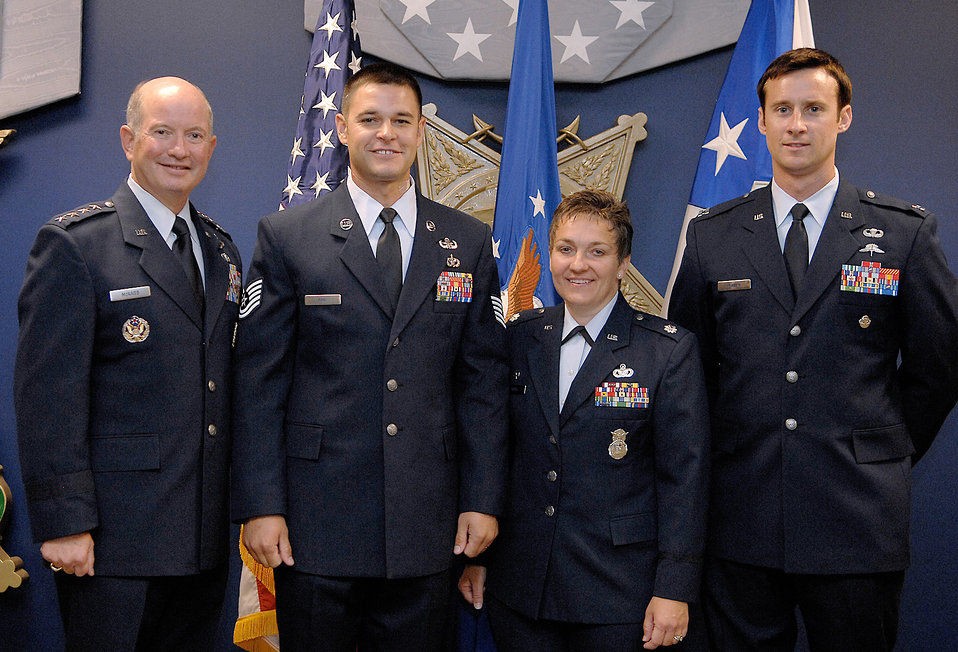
Airmen receive Sijan leadership award

Vice Chief of Staff of the Air Force Gen. Duncan J. McNabb poses with Lance P. Sijan Air Force Leadership Award winners Tech. Sgt. Joshua D. King, Lt. Col. Laura A. Soule and Capt. Stewart J. Parker during a ceremony Aug. 20 at the Pentagon. The Sijan Award recognizes Airmen who demonstrated outstanding leadership while assigned to an organization at the wing level or below.